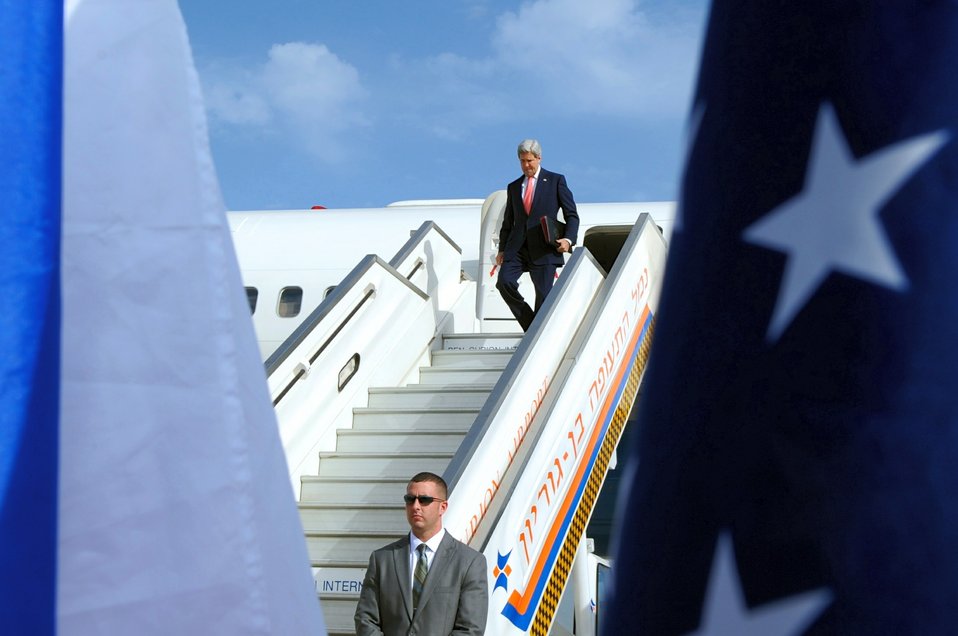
Secretary Kerry Arrives in Tel Aviv

Framed by an American and Israeli flag, U.S. Secretary of State John Kerry disembarks from the plane after arriving in Tel Aviv, Israel, for a meeting with Israeli Prime Minister Benjamin Netanyahu on November 8, 2013.